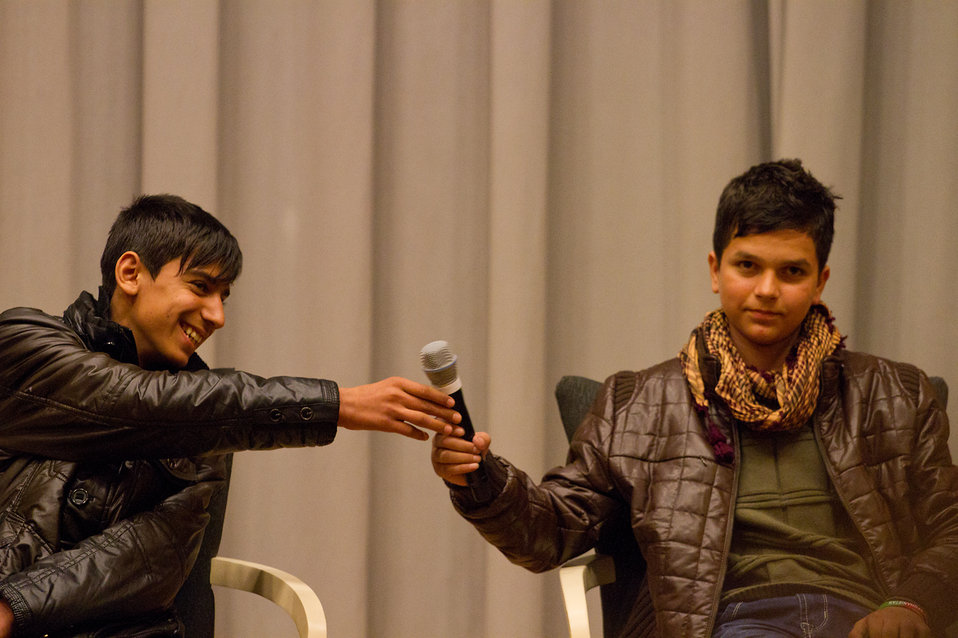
The Stars and Producer of Buzkashi Boys Visit the State Department

The stars and producer of the Oscar-nominated film Buzkashi Boys visit the U.S. Department of State in Washington, D.C., for a screening and Q and A on February 28, 2013.